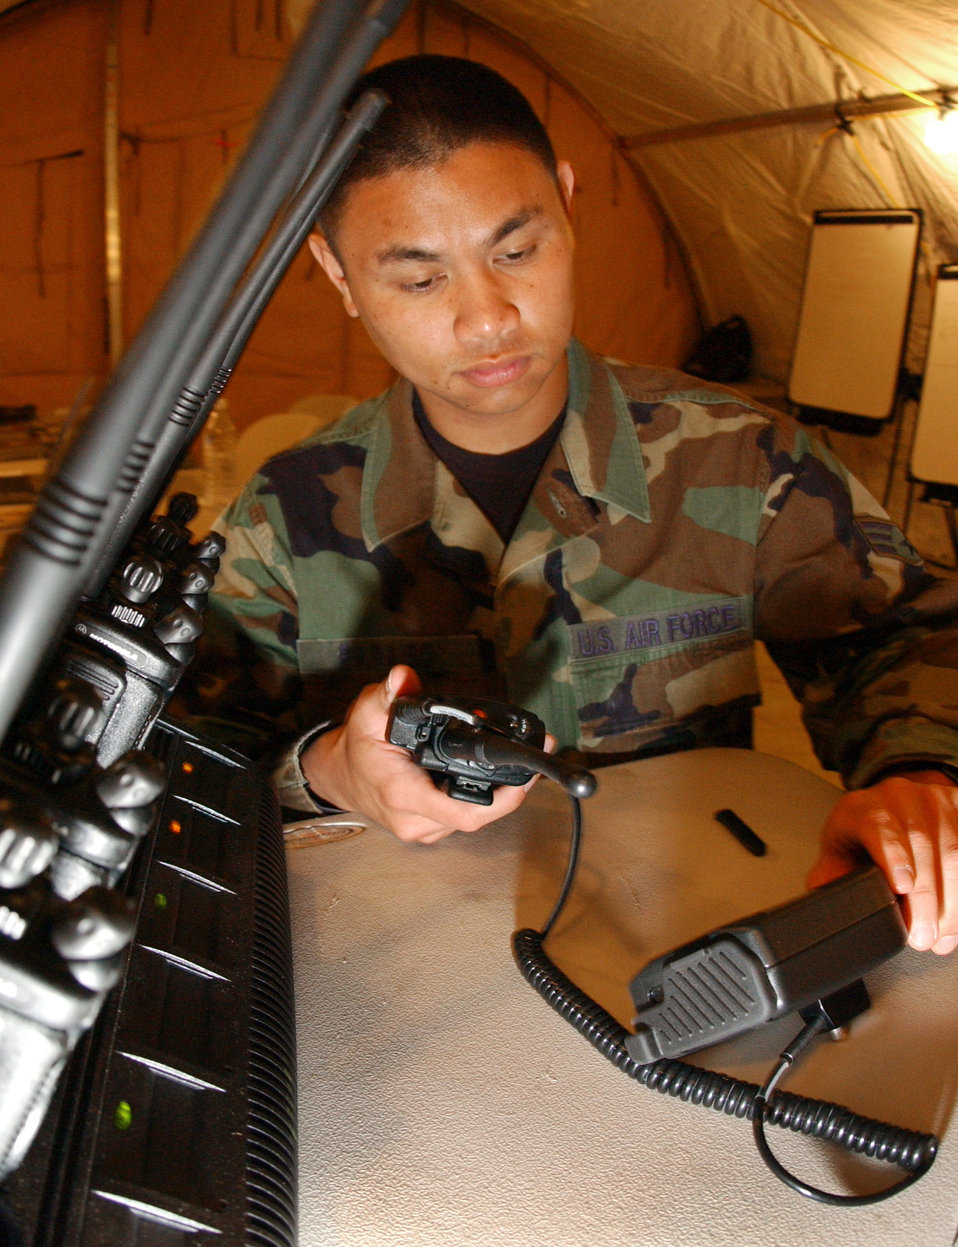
Jump Start

Senior Airman Jason Parasio loads an encryption key for secure communications on land mobile radios, on Monday, April 10, 2006, during Exercise Jump Start at Homestead Air Reserve Base, Fla. The communications exercise is designed to familiarize troops from Reserve, Guard and active military units with equipment they wouldn't normally use. Airman Parasio is a ground radio technician with the 452nd Communications Squadron at March ARB, Calif.